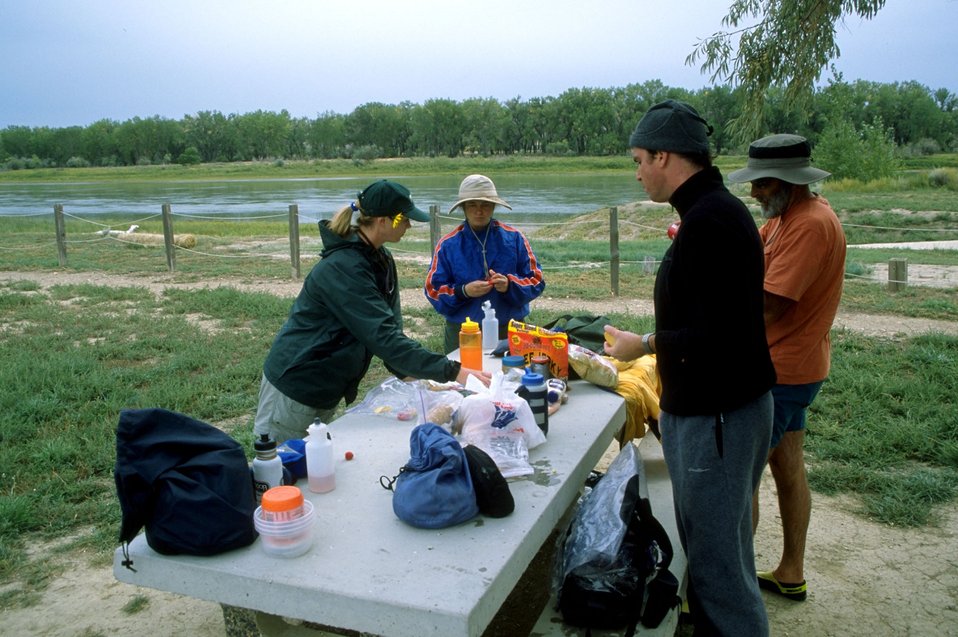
Visitor use at Coal Banks Landing on the Upper Missouri River